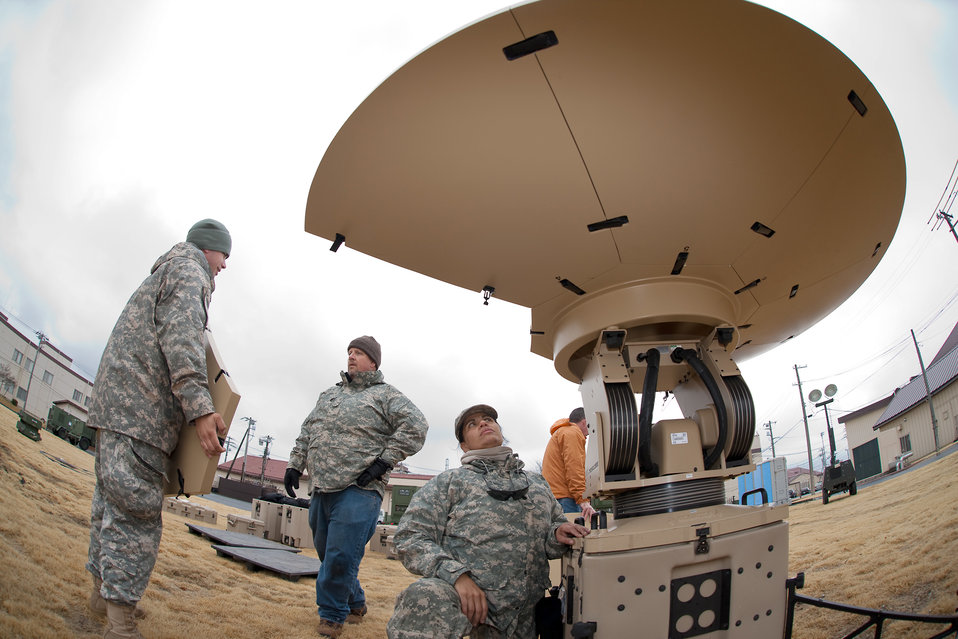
Yokota AB temporarily grows to accommodate Operation Tomodachi support

Army Spc. Sonya Johnson (center) sets up a Hawkeye III portable telecommunications system March 22, 2011, at Yokota Air Base, Japan, to provide high-data-rate communications for newly erected tents. The tents will serve as additional workspaces for personnel deploying to Yokot AB in support of Operation Tomodachi. Specialist Johnson is assigned to the 5th Joint Communications Support Element.